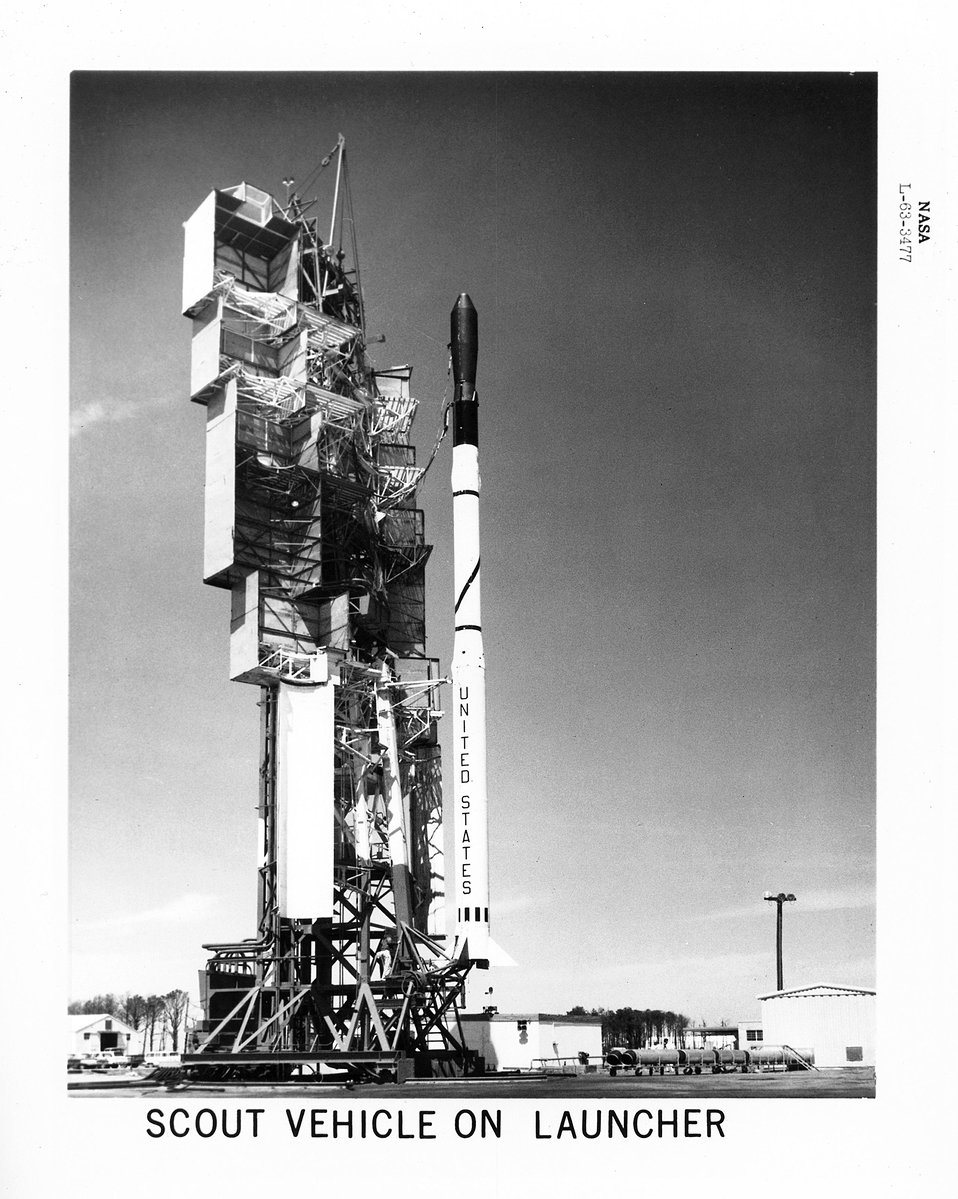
Scout vehicle which was used to launch a non-radioactive mockup of a nuclear generator October 9, 1964 from Wallops Island, VA, on a suborbital flight to an impact point southeast of Bermuda.